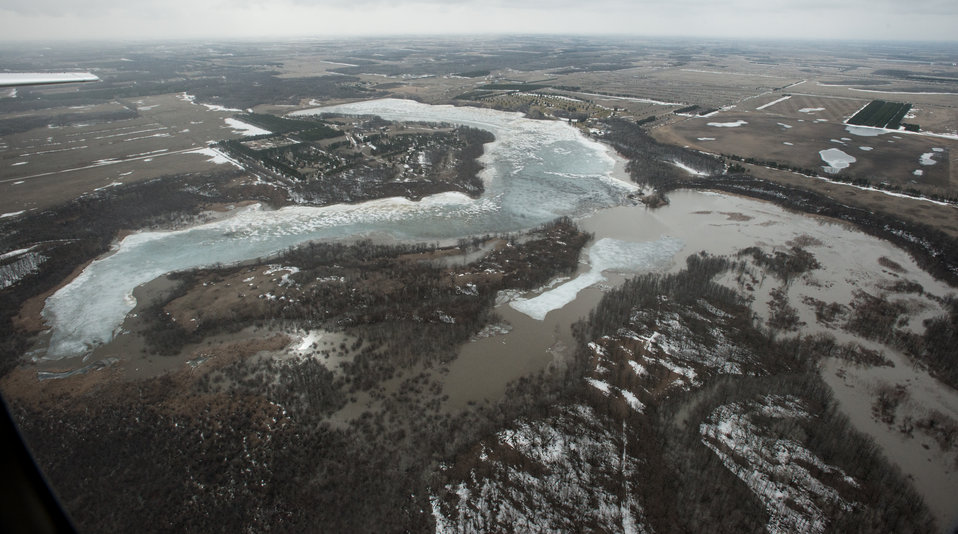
Renwick Dam, in Pembina County, ND, part of the Red River basin, on Wednesday, May 1, 2013. For information about this and other programs from the USDA Red River Basin Initiative (RRBI) please see www.mn.nrcs.usda.gov/news/features13/RRBI.html.